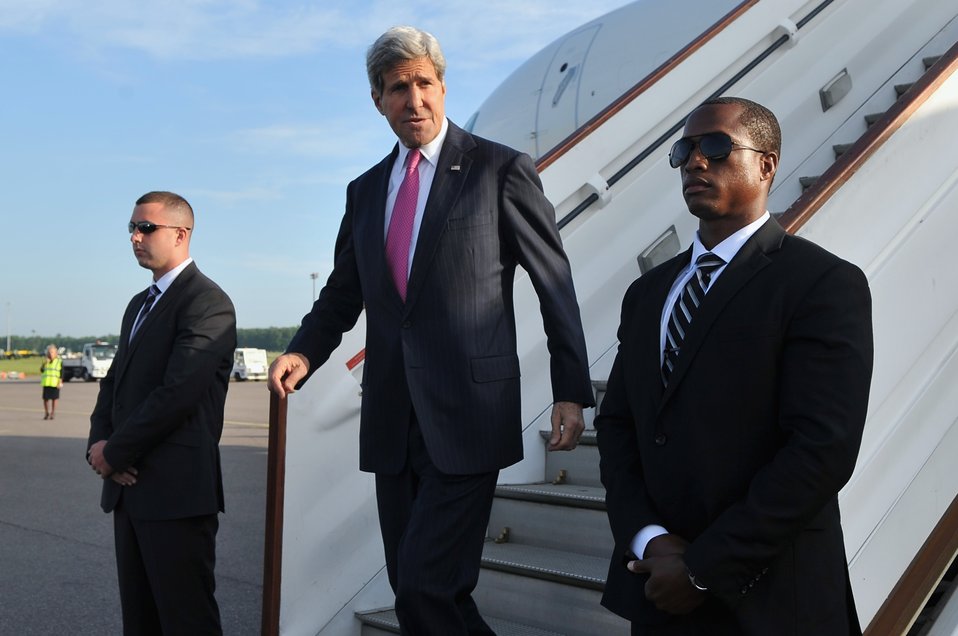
Secretary Kerry Arrives in London For Global Summit to End Sexual Violence in Conflict

U.S. Secretary of State John Kerry arrives in London, UK, to attend the Global Summit to End Sexual Violence in Conflict organized by his British counterpart, Foreign Secretary William Hague, on June 13, 2014.